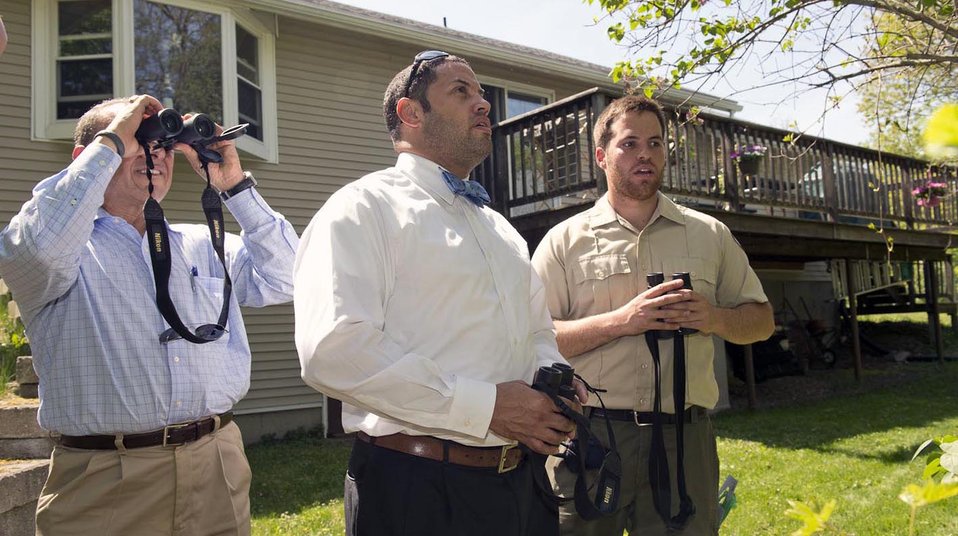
(L to R) U.S. Department of Agriculture (USDA) Animal and Plant Health Inspection Service (APHIS) Plant Protection and Quarantine (PPQ) Deputy Administrator Osama El-Lissy, USDA Marketing and Regulatory Programs (MRP) Deputy Under Secretary Gary Woordward and APHIS PPQ Programs specialist Thomas Tripolone look for signs of Asian Longhorned Beetles (ALB) in trees in the Boston, MA on Monday, May 12, 2014.